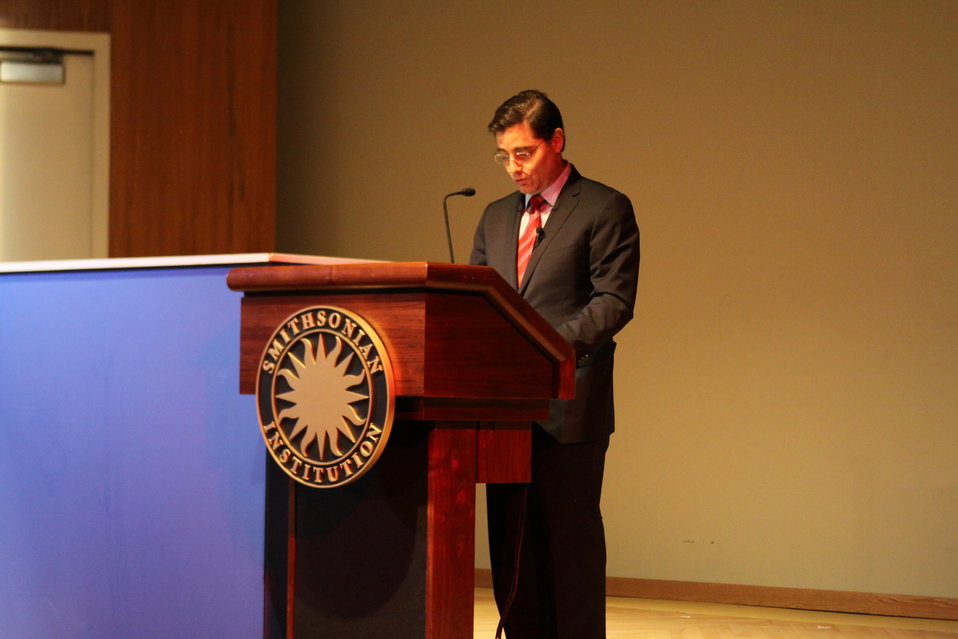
March 12, 2010- Smithsonian Broadband with Elmo